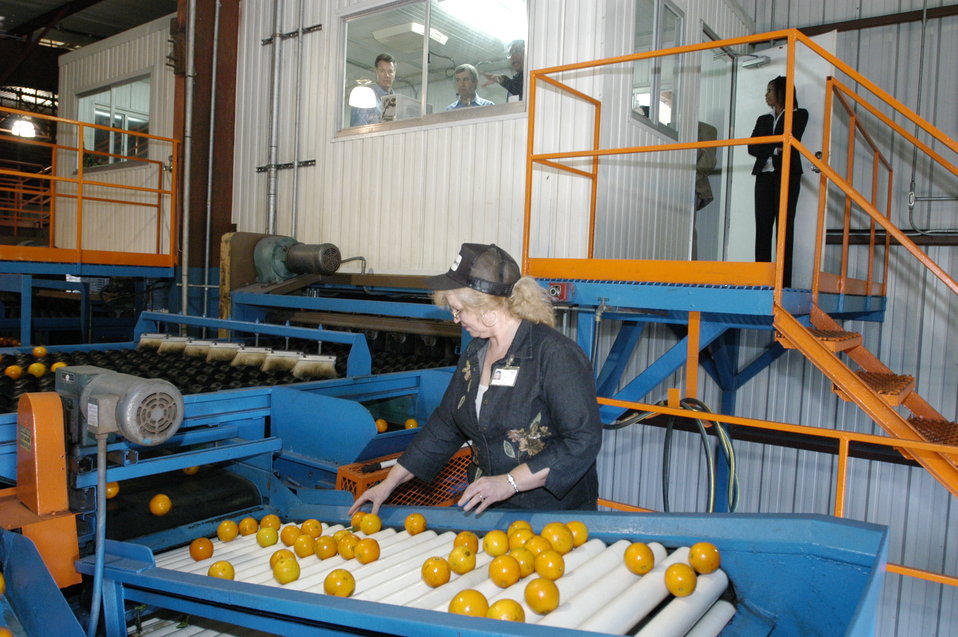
Oranges are processed at the Seald Sweet processing plant in Vero Beach, Florida on February 10, 2006. A trailer load of oranges is weighed on scales in order to determine the weight of fruit received, which will be used to base the payment to the grower. The oranges are unloaded onto a conveyor belt and from this belt the Florida Department of Agriculture and Consumer Services (FDACS) takes a representative sample to test it for juice content, maturity, and to certify the pounds solids per box (the unit that growers' payment is based upon). The fruit is then diverted to storage bins labeled according to the juice specification as determined by FDACS. The fruit is conveyed by belt through a washing process and enters the processing plant where it is graded for bad or damaged fruit. The fruit is then separated by size and sent to the juice extractors. Before juicing, the peel is pricked to extract the oils found in the peel and then the juice is extracted.